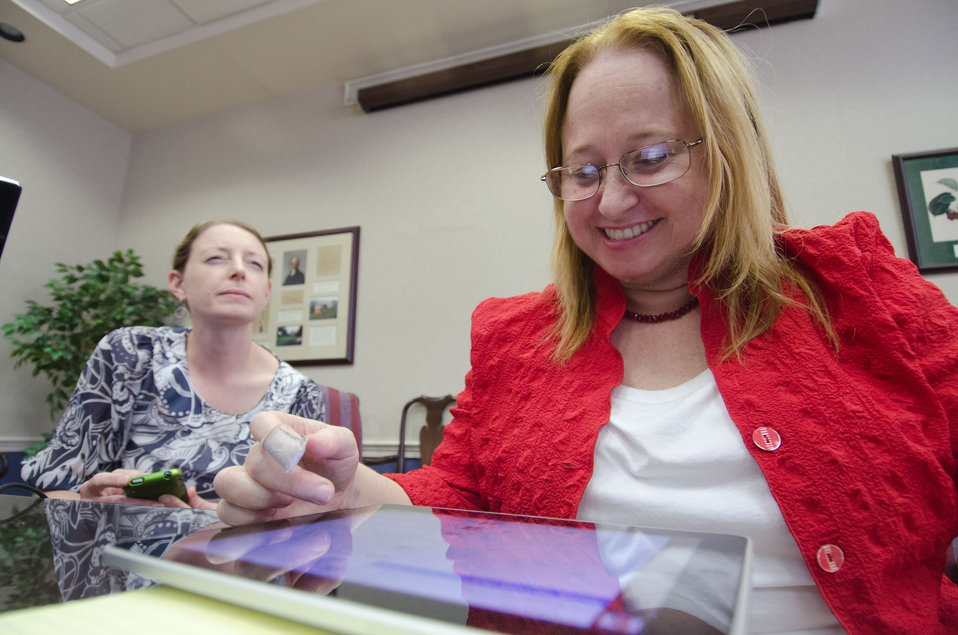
(L to R) Agriculture Special Assistant to the Under Secretary for Marketing and. Regulatory Programs (MRP) Elanor Starmer and Small and Beginning Farmers Program Lead Poppy Davis compare Twitter messages between Agriculture Deputy Secretary Kathleen Merrigan's iPad and smart phones and what is being displayed on a wall monitor, using hosting software, during a live Twitter chat focused on the Department’s support of local and regional food systems and the recent release of the 2.0 version of the Know Your Farmer, Know Your Food Compass on Tuesday, July 24, 2012, in Washington, D.C. Deputy utilized her staff and other subject matter experts to provide useful answers to questions from the public during the #ASKUSDA Virtual Office Hours on Local Food.